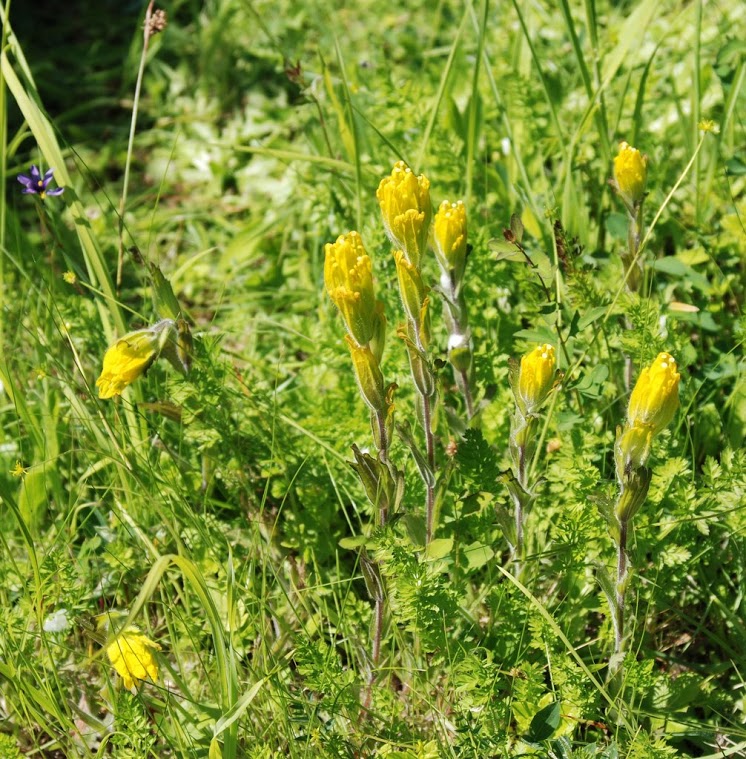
Golden paintbrush

Scientific name: Castilleja levisecta
Status: Threatened